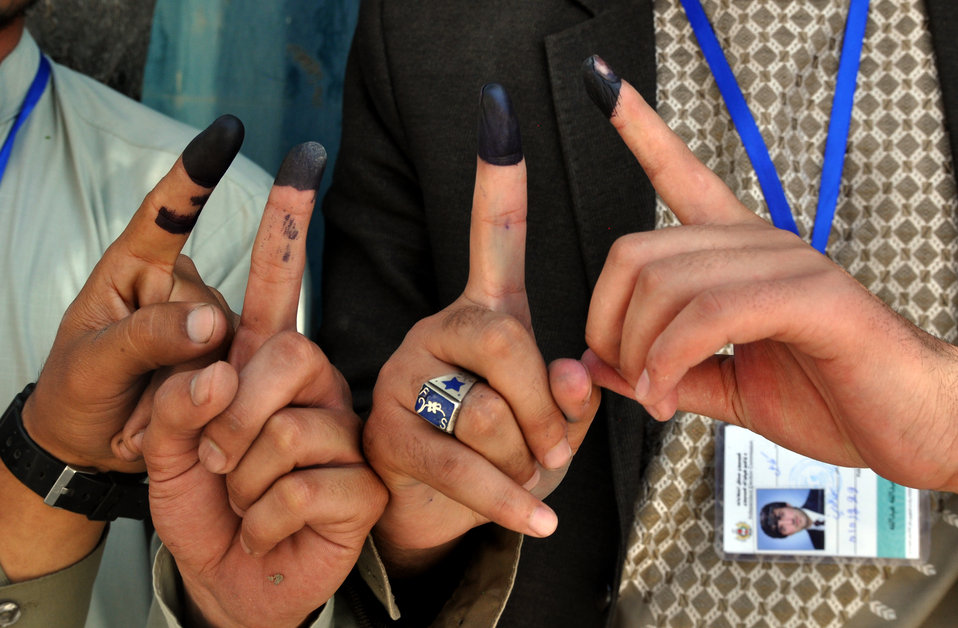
Voters disaply thier inked fingers afte casting thier votes at a polling station in Kabul.